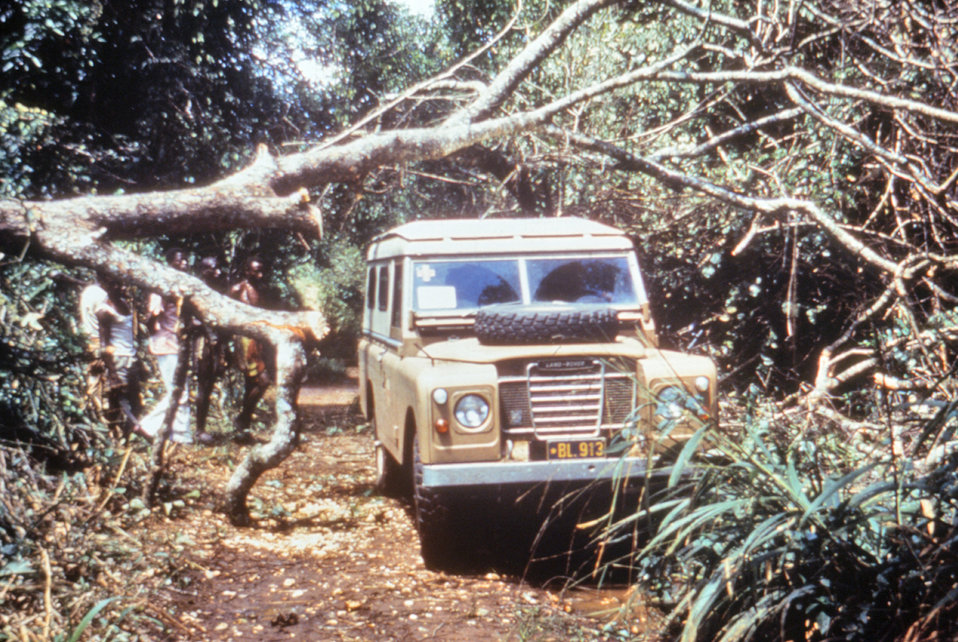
This 1976 photograph, taken near Yambuku, Zaire, now known as the Democratic Republic of Congo, showed one of the surveillance teams traveling by jeep to investigate surrounding villages for the possible spread of the Ebola virus.